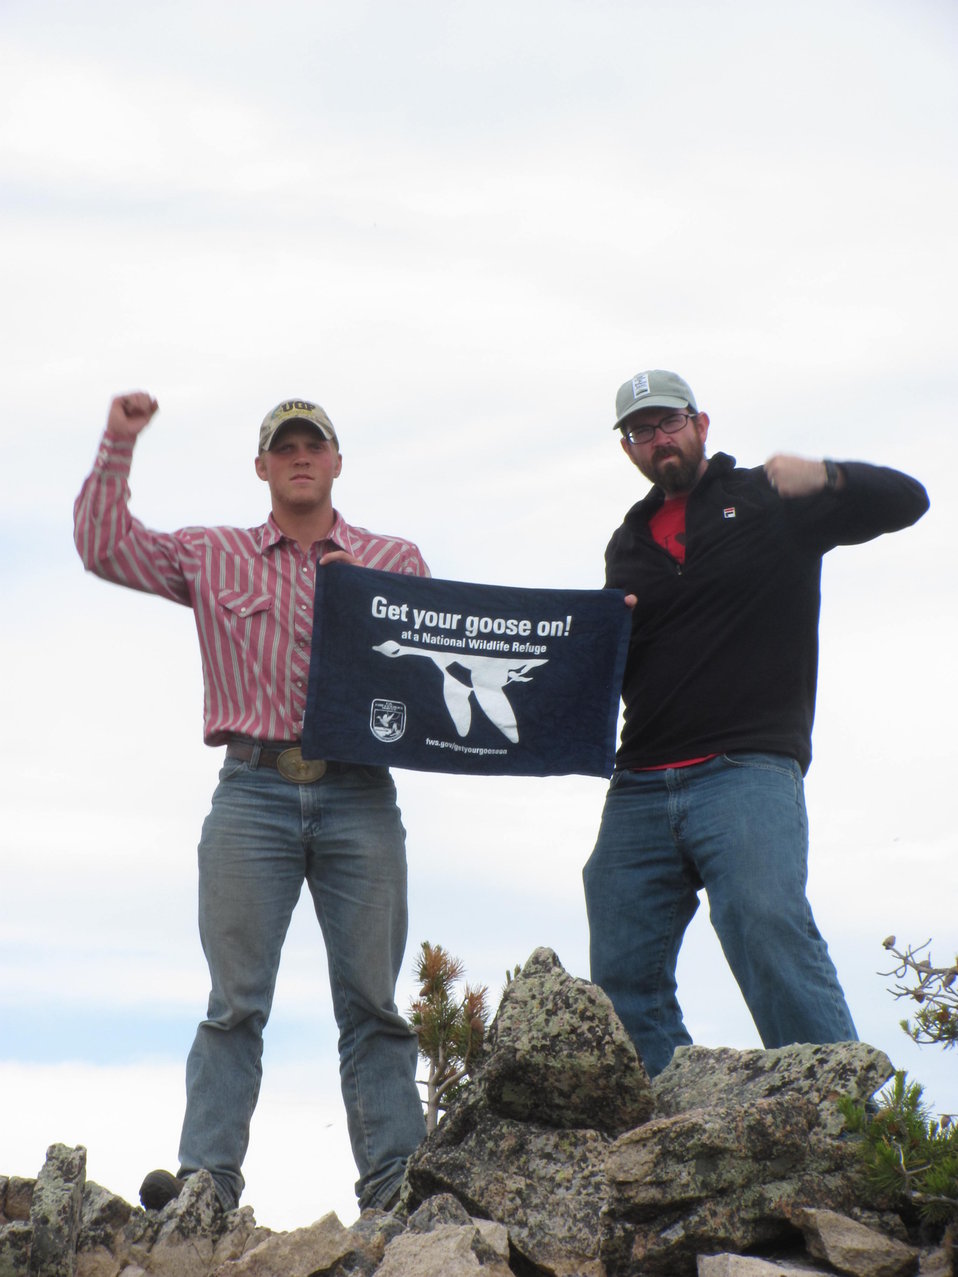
Get Your Goose On!

The Benton Lake National Wildlife Refuge traveling strike team Gets Their Goose On!